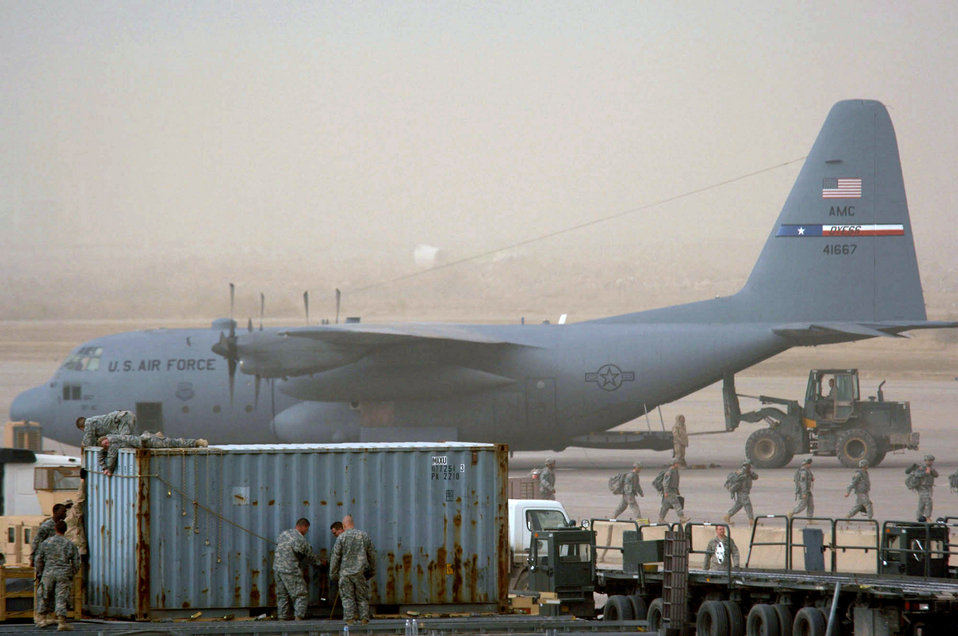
Now boarding

Airfield operations continue despite a dust storm Jan. 30 at Sather Air Base, Iraq. Sather AB is located on the west side of Baghdad International Airport and base Airmen move 6,200 passengers weekly and more than 1,700 tons of cargo weekly.